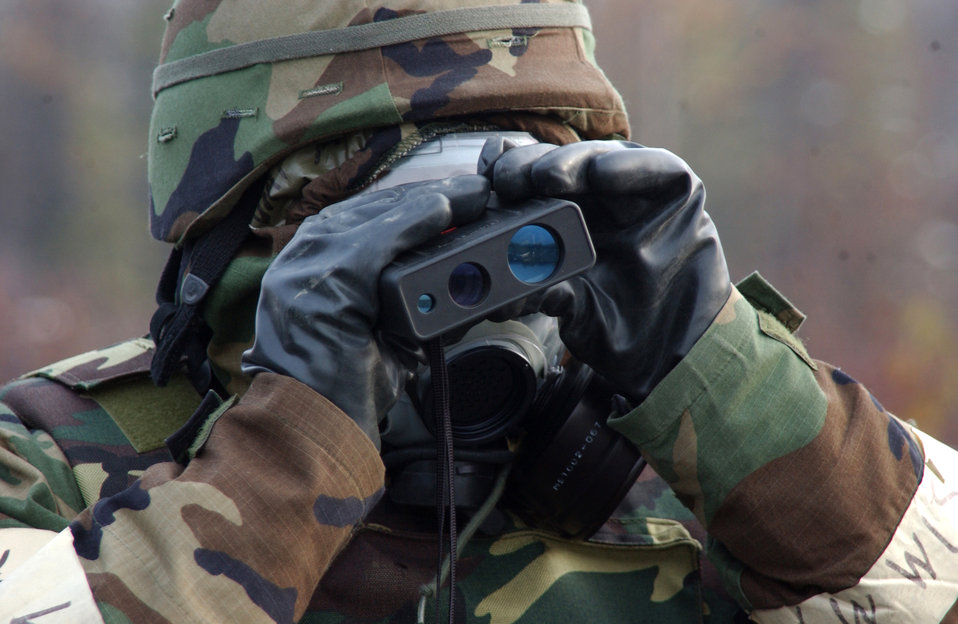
It's real far

EIELSON AIR FORCE BASE, Alaska - Airman 1st Class Isaiah Schaff uses a range finder to determine the distance to an unexploded ordnance during an operational readiness exercise here Sept. 15. Airman Schaff is assigned the 354th Civil Engineer Squadron.